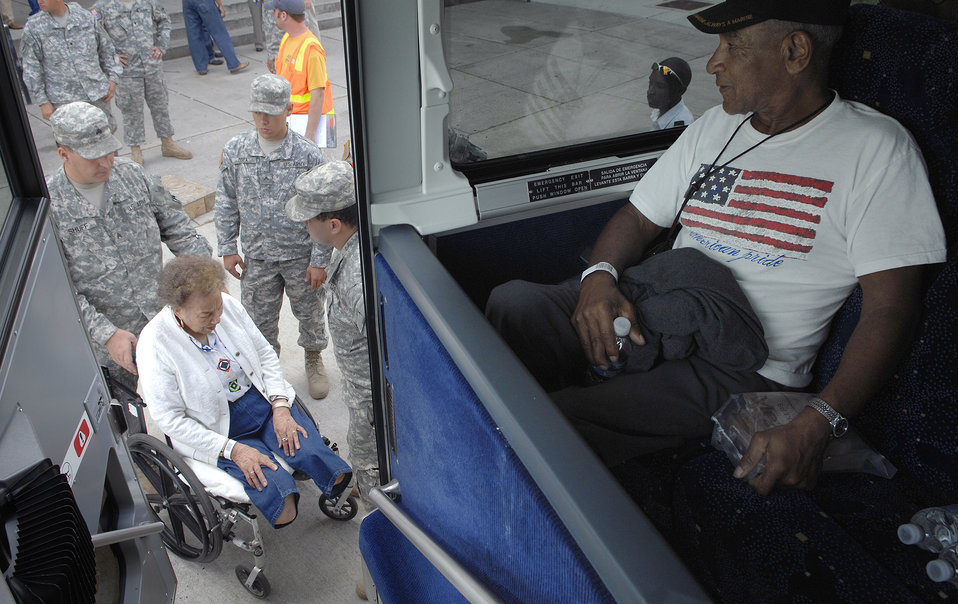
Carried to safety

Soldiers of the Louisiana Army National Guard help Mrs. Katy Jackson, 89, into a bus evacuating to Shreveport, La., in anticipation of the landfall of Hurricane Ike Sept. 12 at the civic center in Lake Chalres, La.